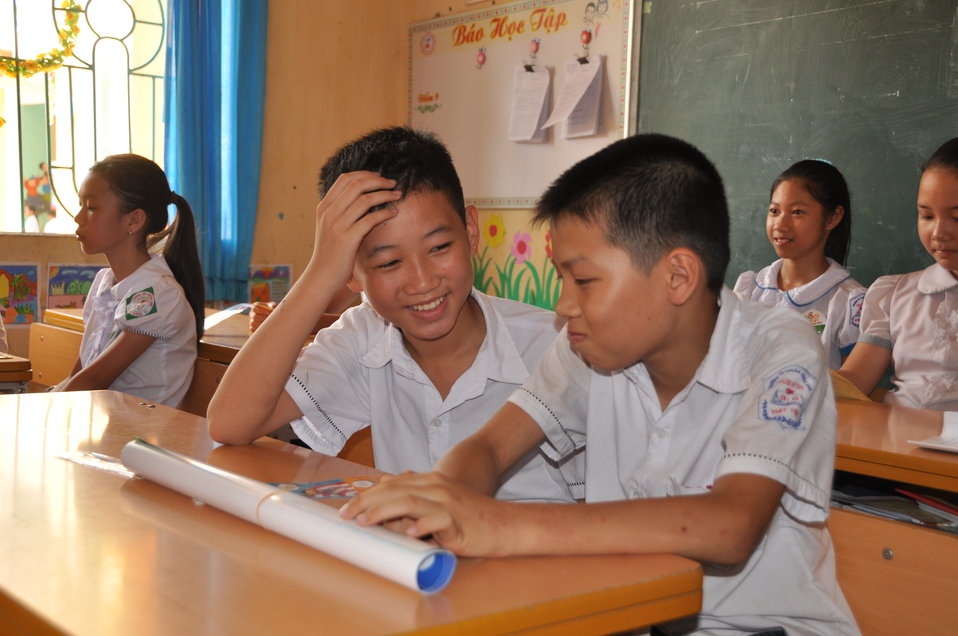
USAID supports deworming education and medication distribution in Bac Giang Province

May 20, 2013